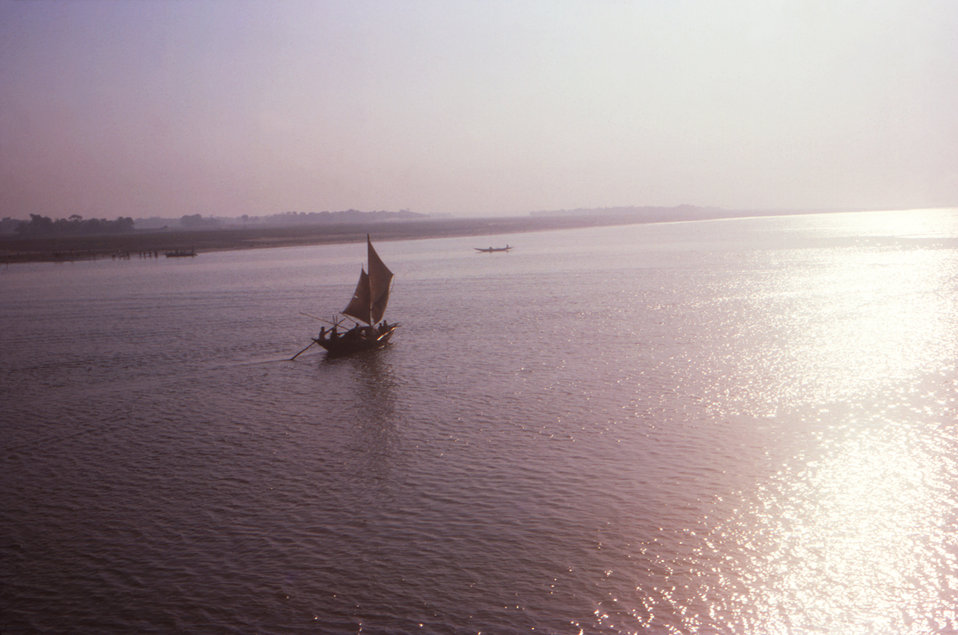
This 1975 photograph captured a sailboat moving gracefully along Bangladesh's Meghna River, the widest river in the country, and one of the widest in the World. This was one of many water craft that plied the waterways, and which were, and still are a major means of transport throughout this costal country,